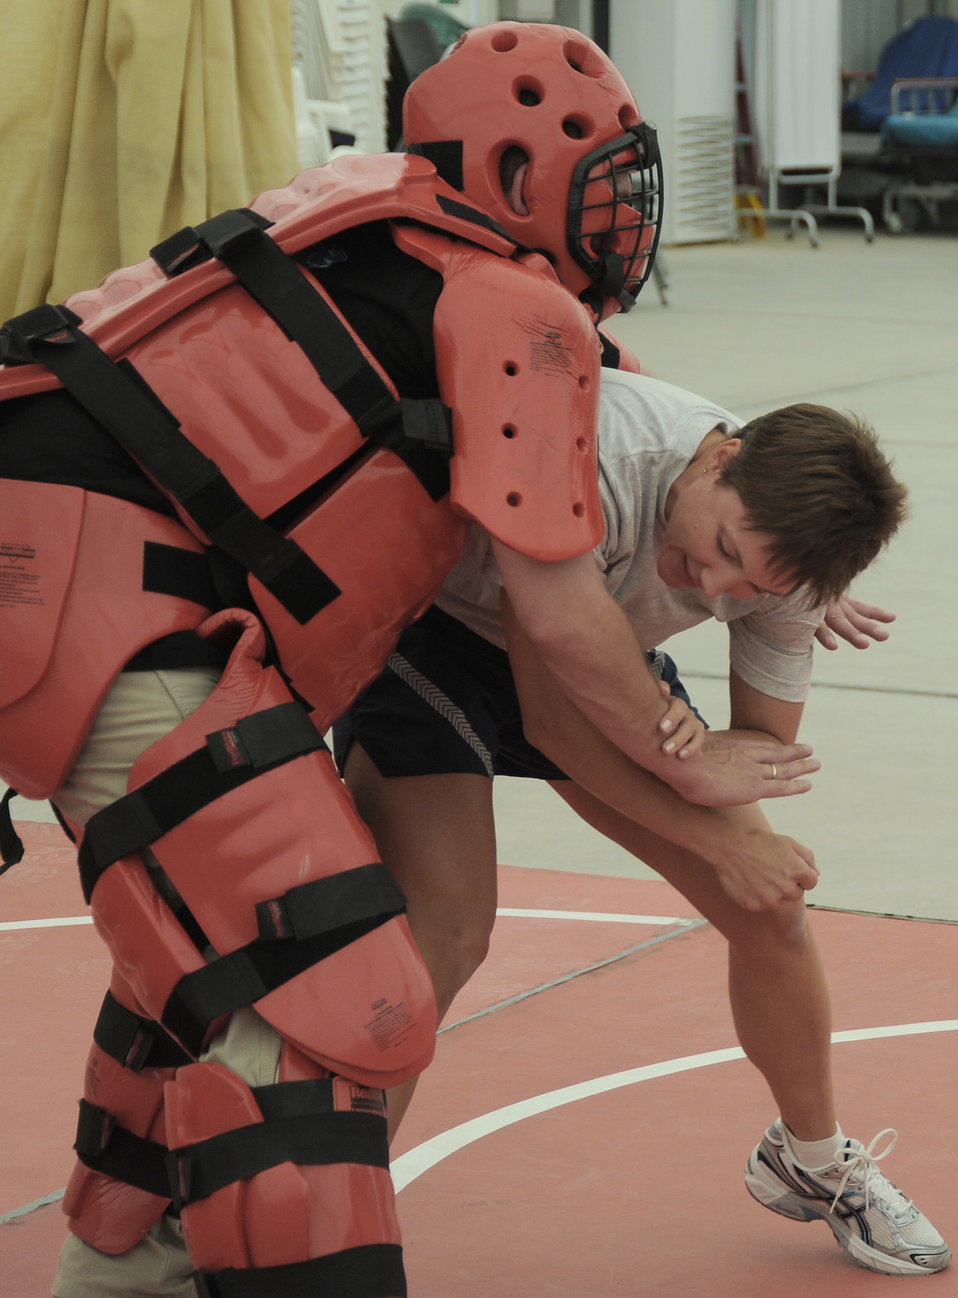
Getting defensive

Master Sgt. Malinda Kingsley fights off the